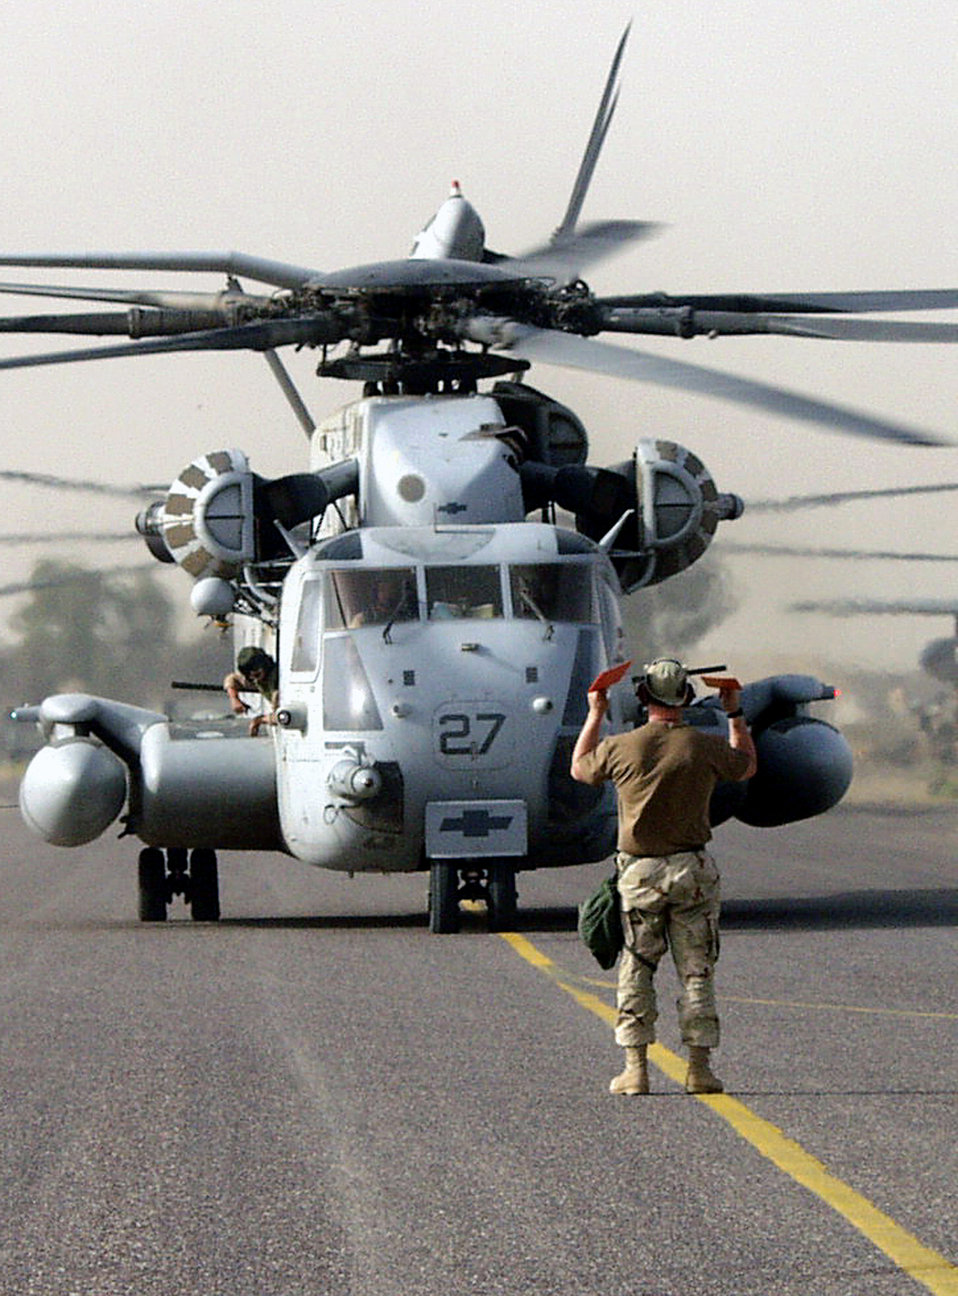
The Marines have landed

OPERATION IRAQI FREEDOM – Staff Sgt. Jassen Jack, directs a Marine CH-53 helicopter carrying Marines to a parking spot by a C-130. The 386th Transient Alert team played a key role in taking care of the aircraft transporting nearly 850 Marines moving forward to support operations in Iraq. Operation Iraqi Freedom is the multinational coalition effort to liberate the Iraqi people, eliminate Iraq’s weapons of mass destruction and end the regime of Saddam Hussein.